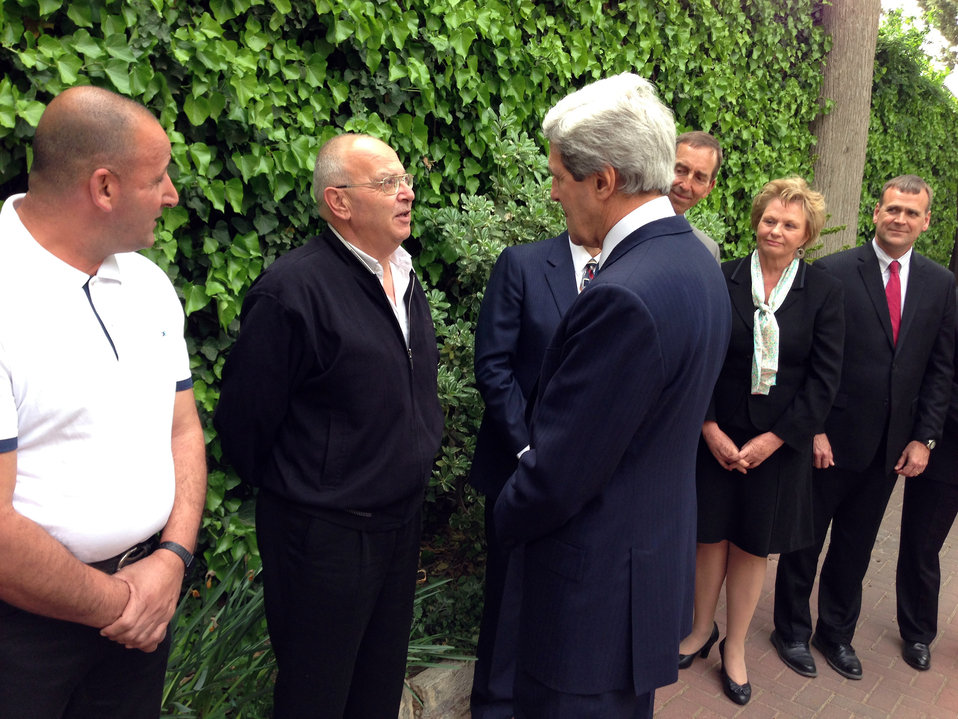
Secretary Kerry Speaks With the Staff of Consulate General Jerusalem

U.S. Secretary of State John Kerry speaks with Abraham Rassas, a 30-year staff member, as he meets employees of the U.S. Consulate General in Jerusalem, April 8, 2013.